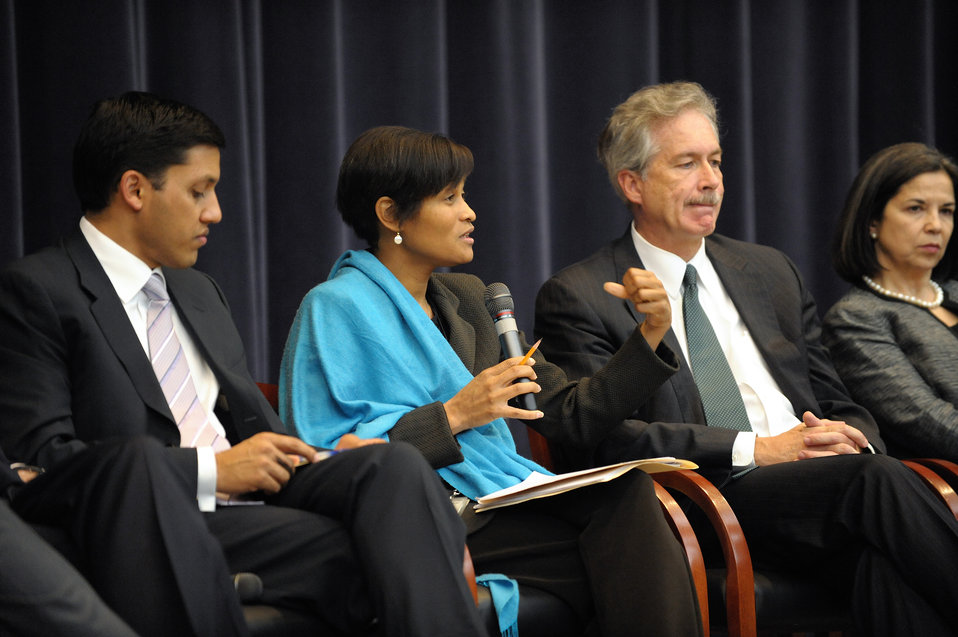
Counselor Mills Participates in the Town Hall

Counselor Cheryl Mills, center, participates in the Town Hall at the 2011 Global Chiefs of Mission Conference at the U.S. Department of State in Washington, D.C., on February 3, 2011. USAID Administrator Rajiv Shah, center left; Under Secretary of State for Political Affairs William J. Burns, center right; and Under Secretary of State for Democracy and Global Affairs Maria Otero, right; are also pictured in the photo.